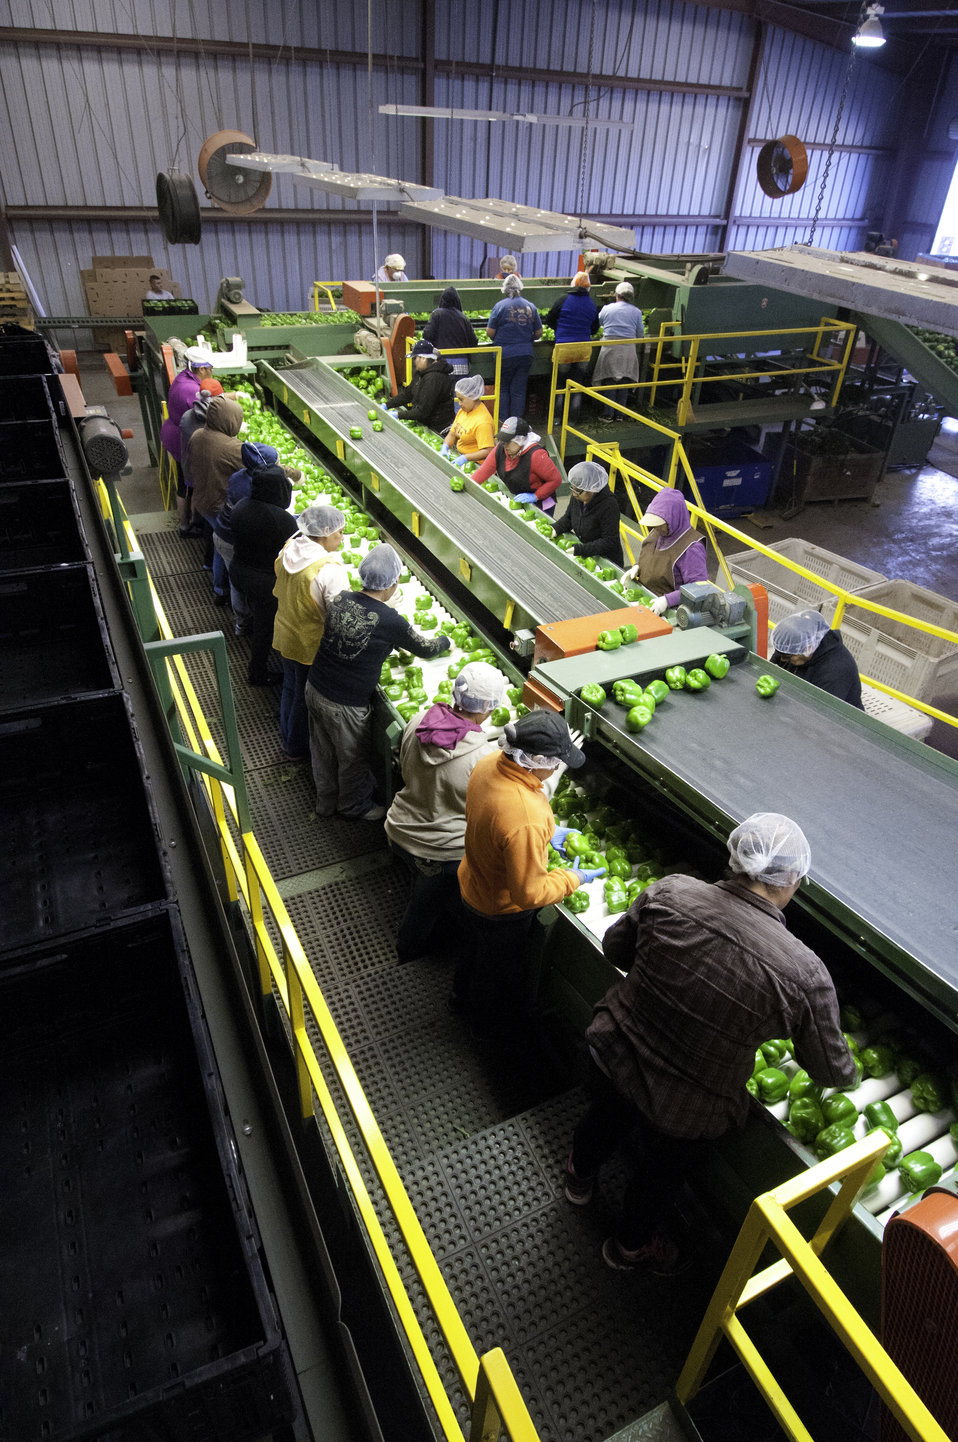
Migrant workers process green peppers on Uesugi Farms in Gilroy, CA on Wednesday, Aug. 28, 2013.